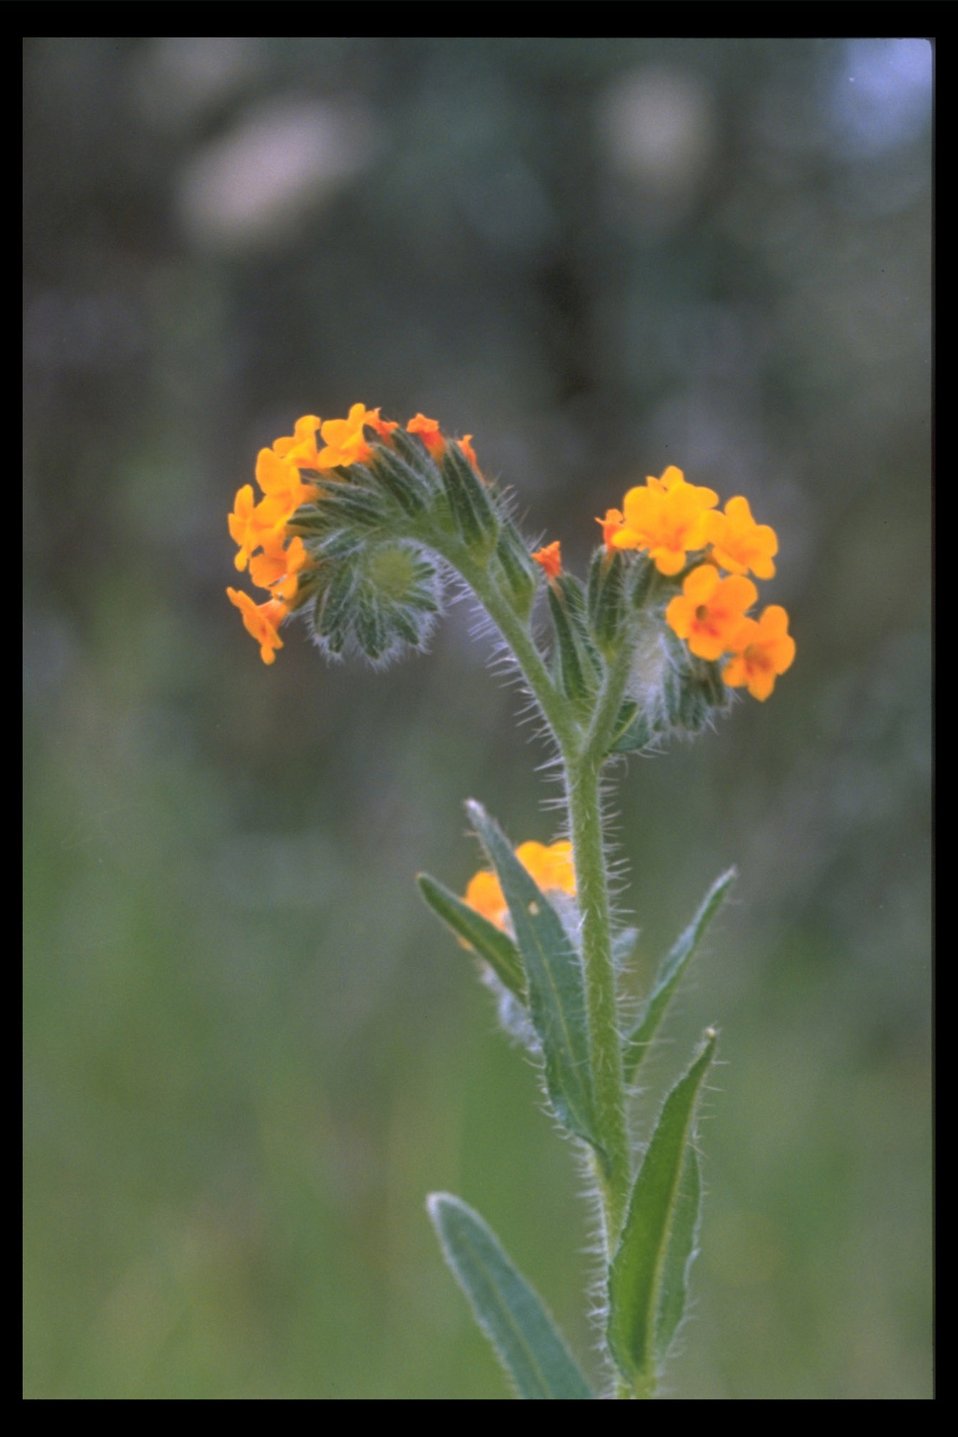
Close up of Fiddleneck (Amsinckia menziesii var intermedia) at Lower Table Rock.